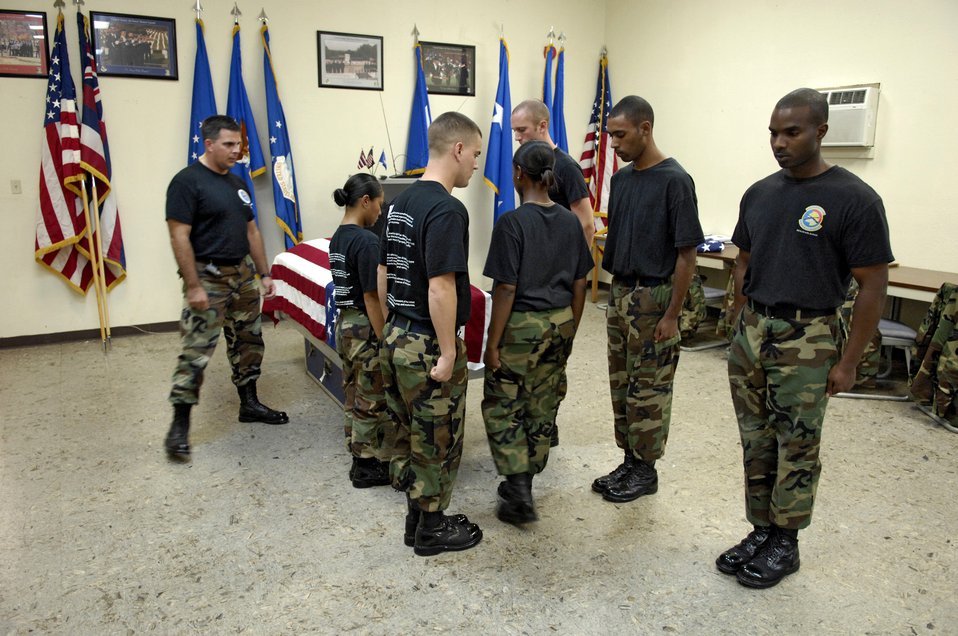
Honoring customs

Members from the 15th Airlift Wing Honor Guard practice pallbearing procedures at Hickam Air Force Base, Hawaii Oct. 25. The base honor guard emphasizes the importance of military customs and courtesies, dress and appearance, and drill and ceremony.